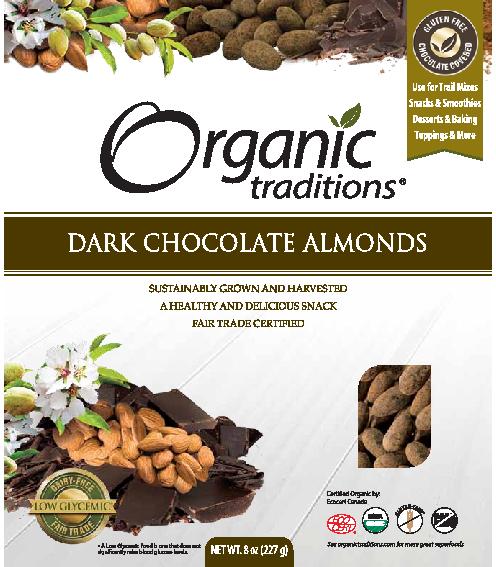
ChocolatAlmond 227g US Front3 LR